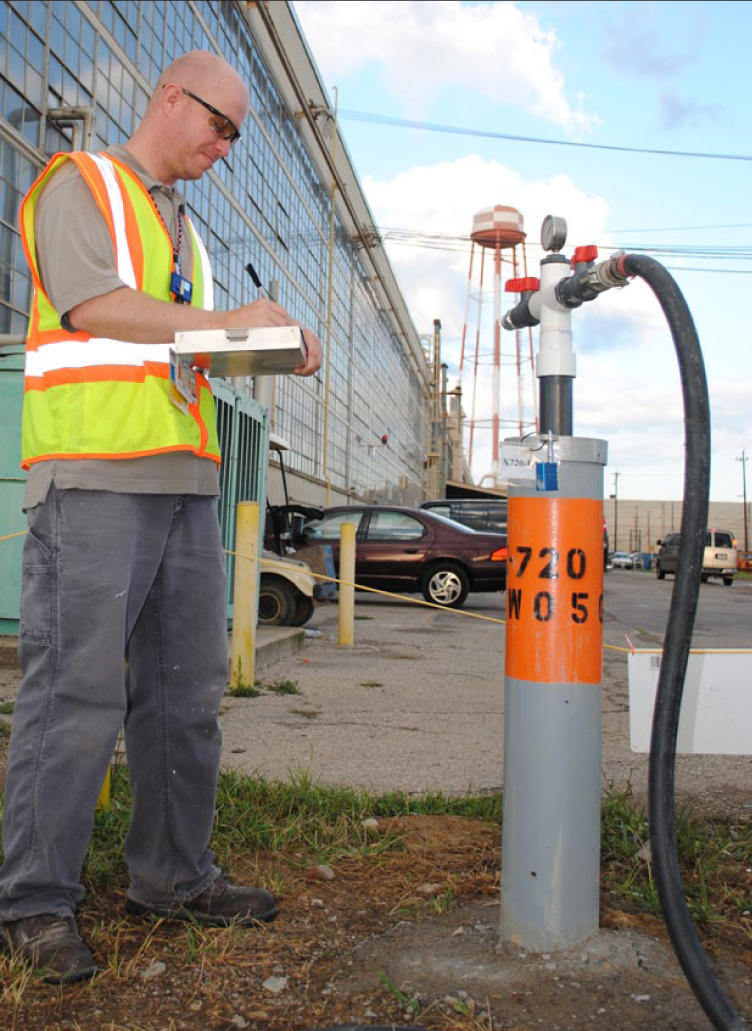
Portsmouth Site Feeds Bacteria to Render Hazardous Groundwater Waste Harmless

Neil Smith reviews the pressure and flow of a food-grade compound being injected into an underground plume of hazardous waste near the X-720 Maintenance Facility. The sodium lactate compound promotes bacterial growth in the groundwater that turns hazardous waste into harmless end products.